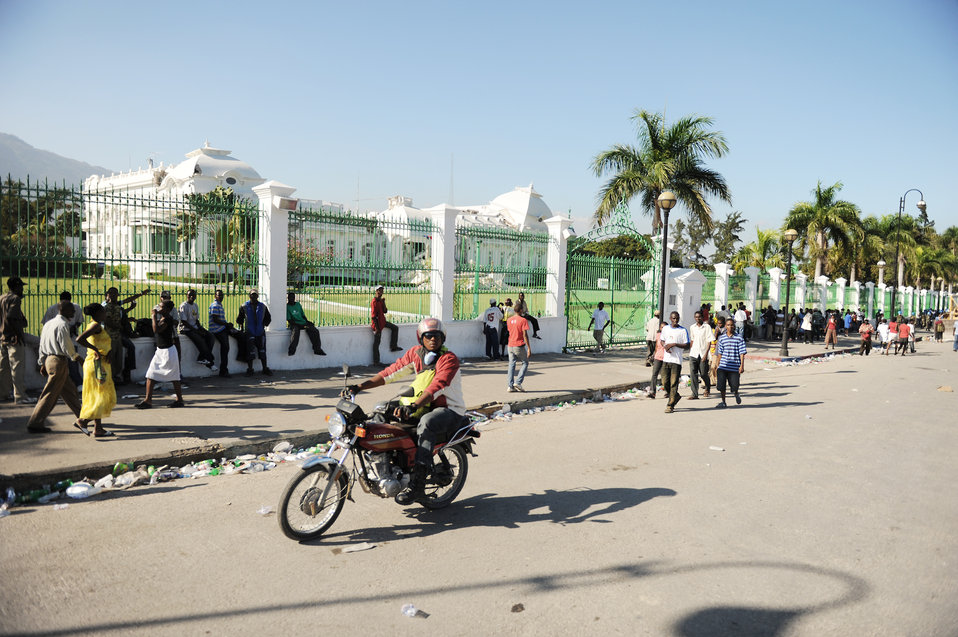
Haiti Earthquake Relief

A Haitian man rides past the presidential palace Jan. 17, 2010, in Port-au-Prince, Haiti. The palace was damaged after a magnitude 7 earthquake hit the country Jan. 12, 2010. Department of Defense assets have been dispatched to Haiti to assist with humanitarian assistance and disaster relief.